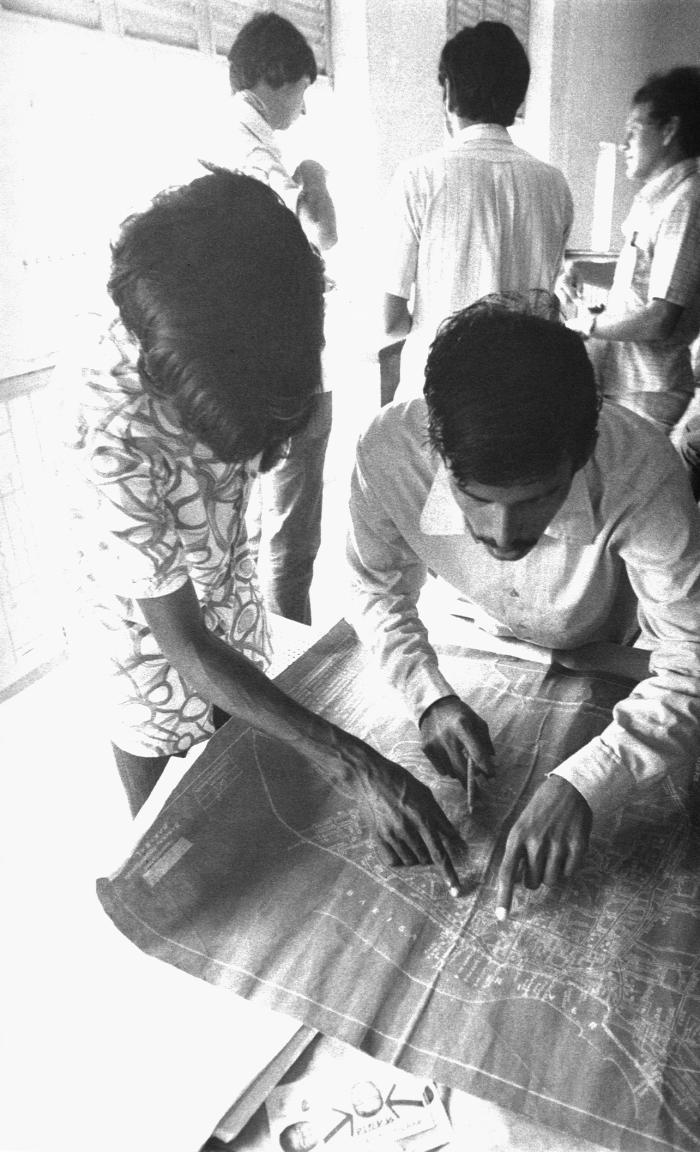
This 1975 image depicted two local Bangladesh men who were working as smallpox eradication team volunteers, as they were analyzing a 'Containment Map', which outlined the layout of the surrounding community, its inhabitants, and whether or not there were any smallpox cases that had been discovered. The keeping of detailed records was extremely important, and is one of the hallmarks of properly practiced epidemiologic science. Smallpox cases that were uncovered had to be followed to a successful outcome, as well as anyone associate with close contact with any confirmed smallpox case. No matter even if it was a single case, all such disease was treated as an emergent situation, and once located were documented and tracked using methods such as 'mapping'.